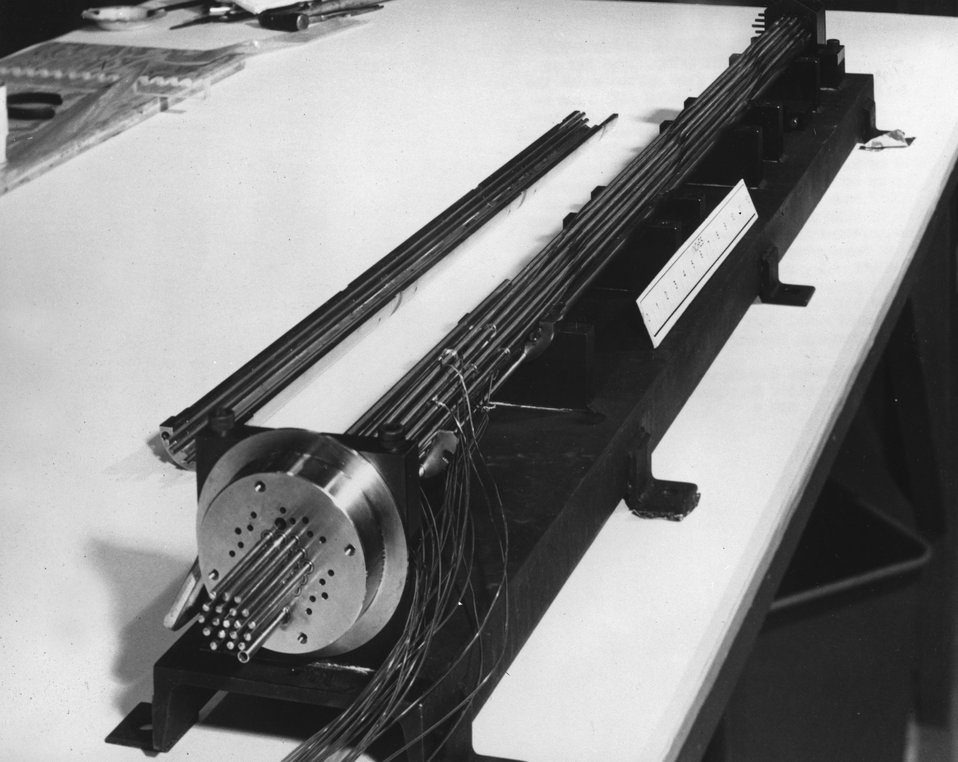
The FFM is an engineering-scale sodium flow system where the thermal-hydraulic behavior of LMFBR fuel rods is tested using electrically heated rods to simulate the fuel. c. 1972